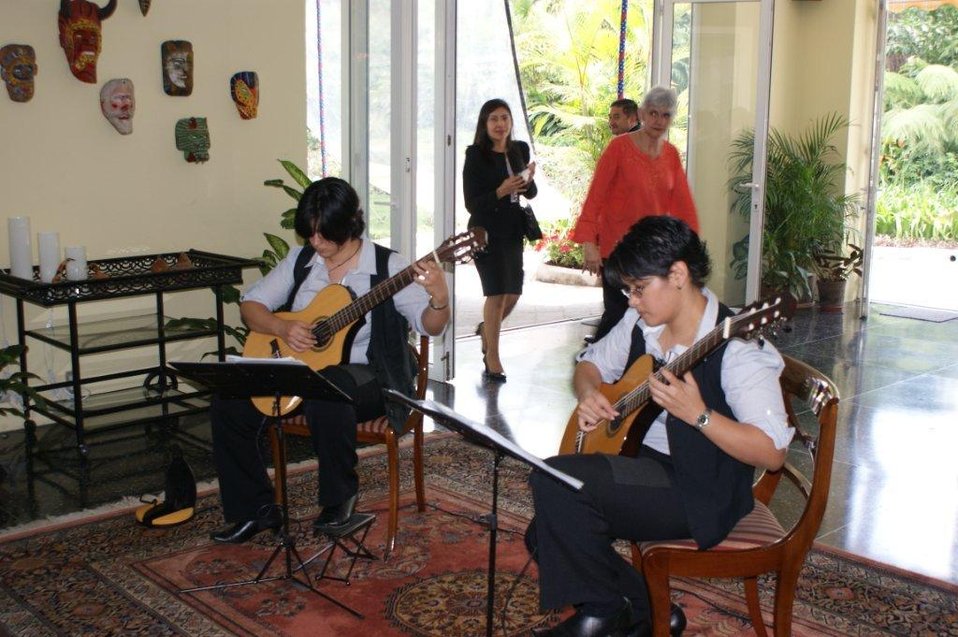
July 4th Celebration at U.S. Embassy in Guatemala

Two local guitarists serenade guests as they enter the grounds of the Ambassador's Residence for the U.S. Independence Day celebration in Guatemala City, Guatemala, on July 2, 2010.